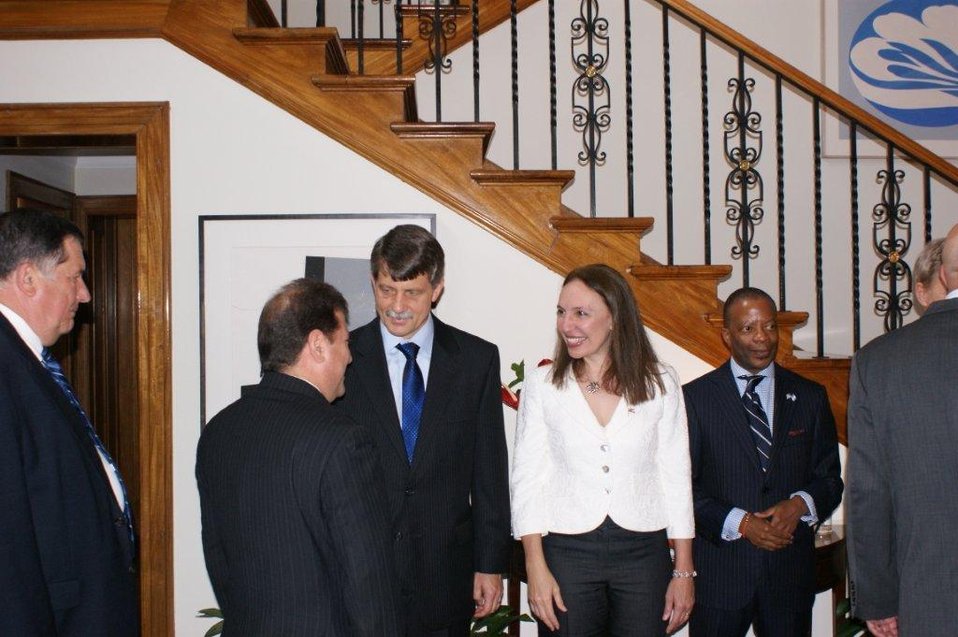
July 4th Celebration at U.S. Embassy in Guatemala

U.S. Ambassador to Guatemala Stephen McFarland and Mrs. McFarland greet guests with Deputy Chief of Mission Todd Robinson for the U.S. Independence Day celebration at the Ambassador's residence in Guatemala City, Guatemala, on July 2, 2010.